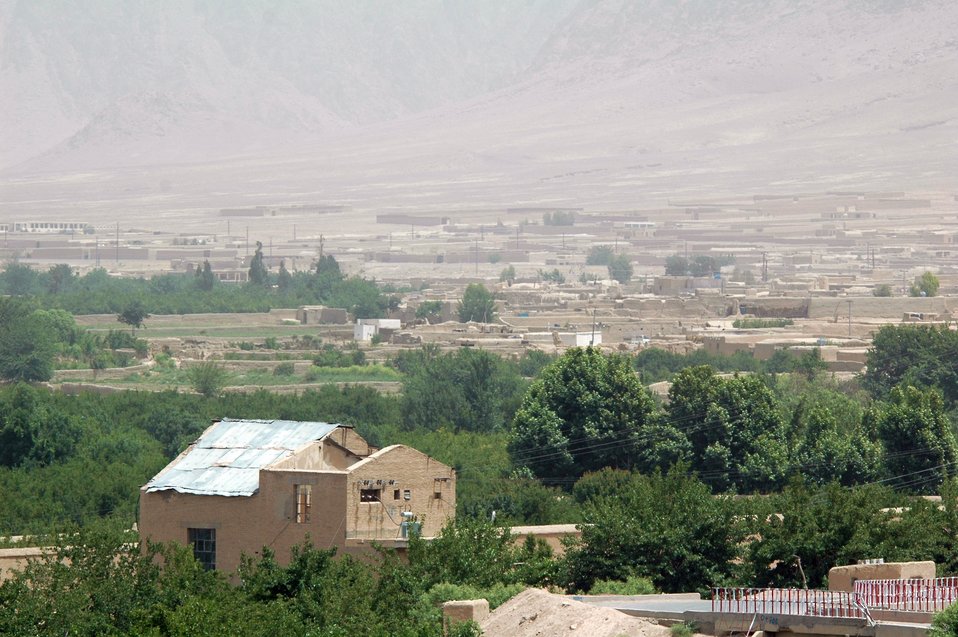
CODEL Berman